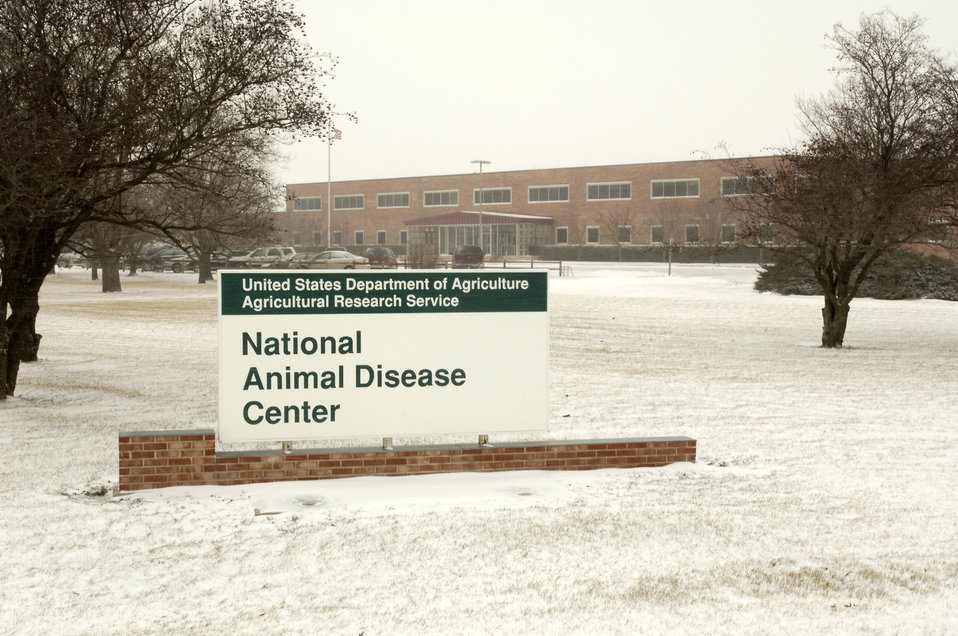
U.S. Department of Agriculture (USDA) Agricultural Research Service (ARS) laboratory in Ames, Iowa is a World Organization for Animal Health (OIE) reference laboratory for numerous diseases, including avian influenza.